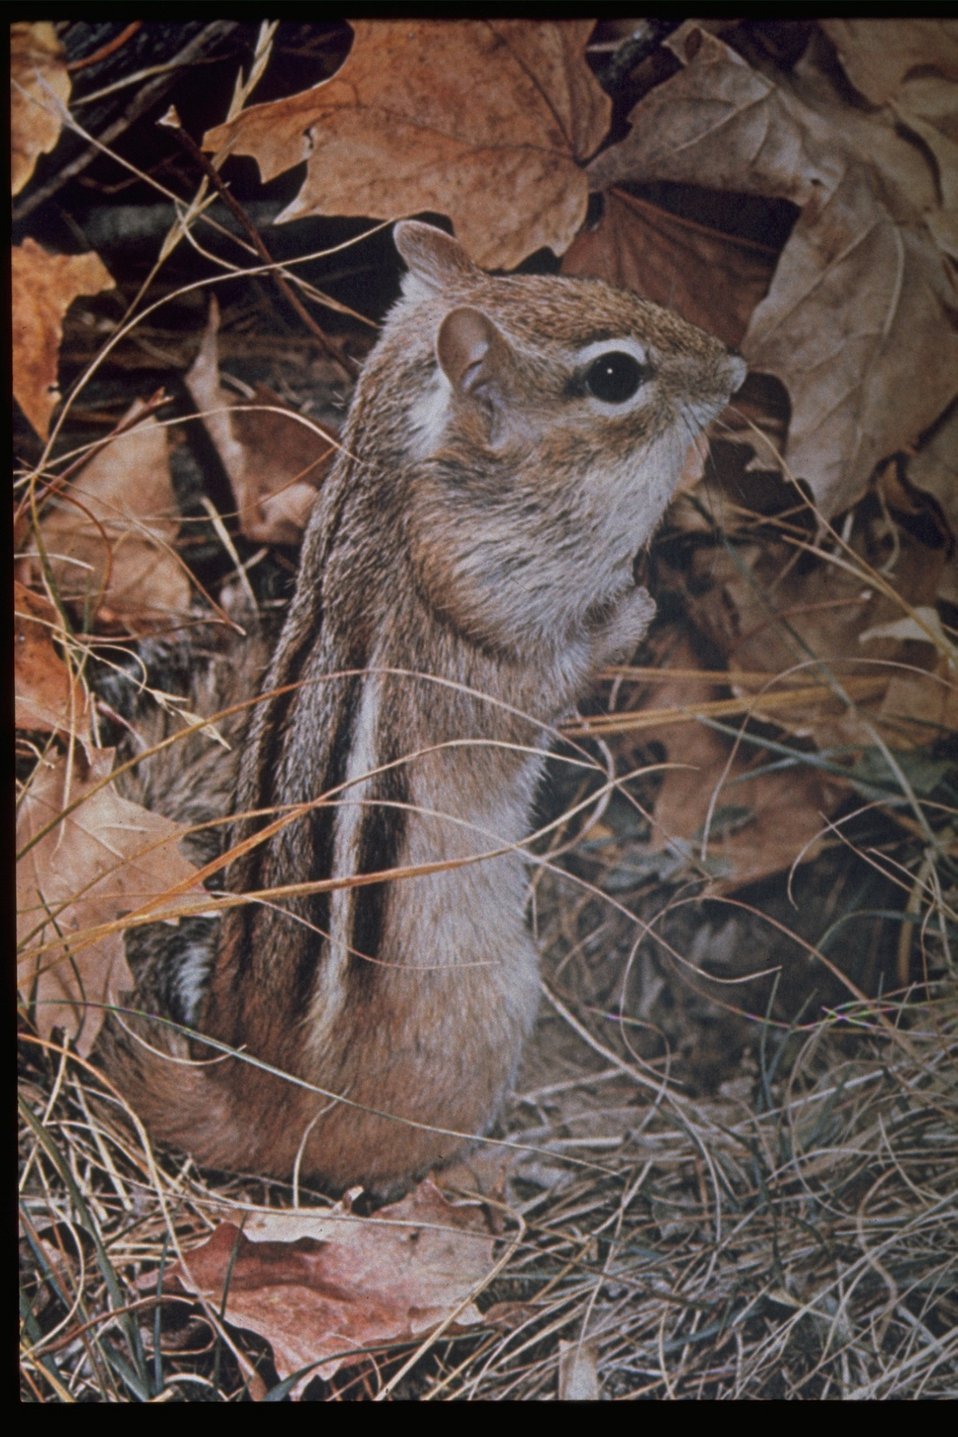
A chipmunk standing next to dry leaves.